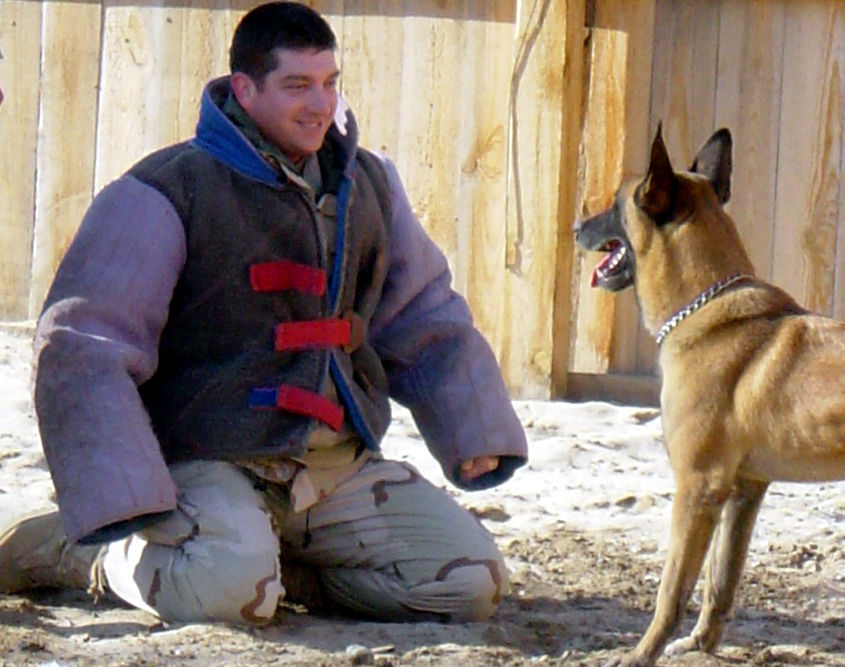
Seeing eye to eye

MANAS AIR BASE, Kyrgyzstan (AFPN) -- Lt. Col. Franklin Malafarina gets up-close and personal during a military working dog training session with Gizmo, a military working dog here, Feb. 5. Working dogs here provide explosive detection support to protect all people and resources, and establish a force-protection presence that will halt or deter hostile action against coalition forces. Colonel Malafarina is the 376th Air Expeditionary Wing chief of staff.